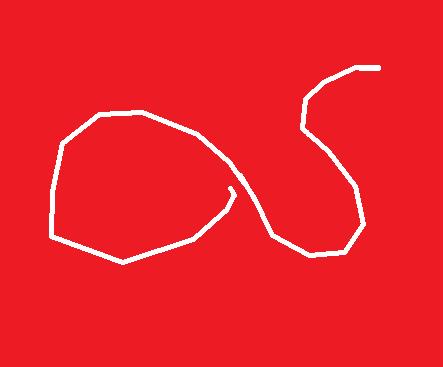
Deutsch: A-S